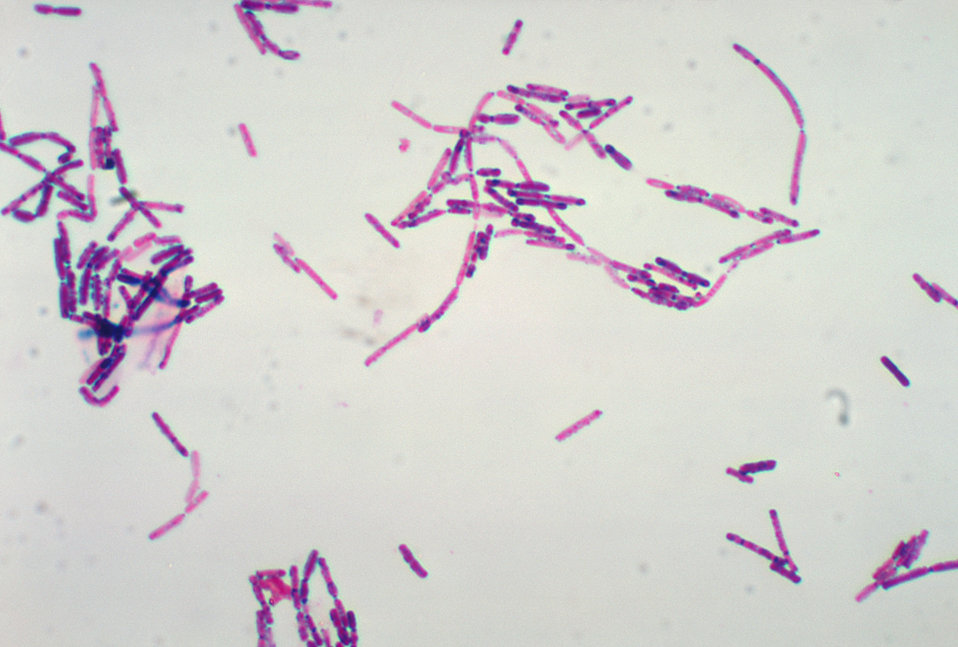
Bacillus cereus subsp. mycoides. Gram stain.